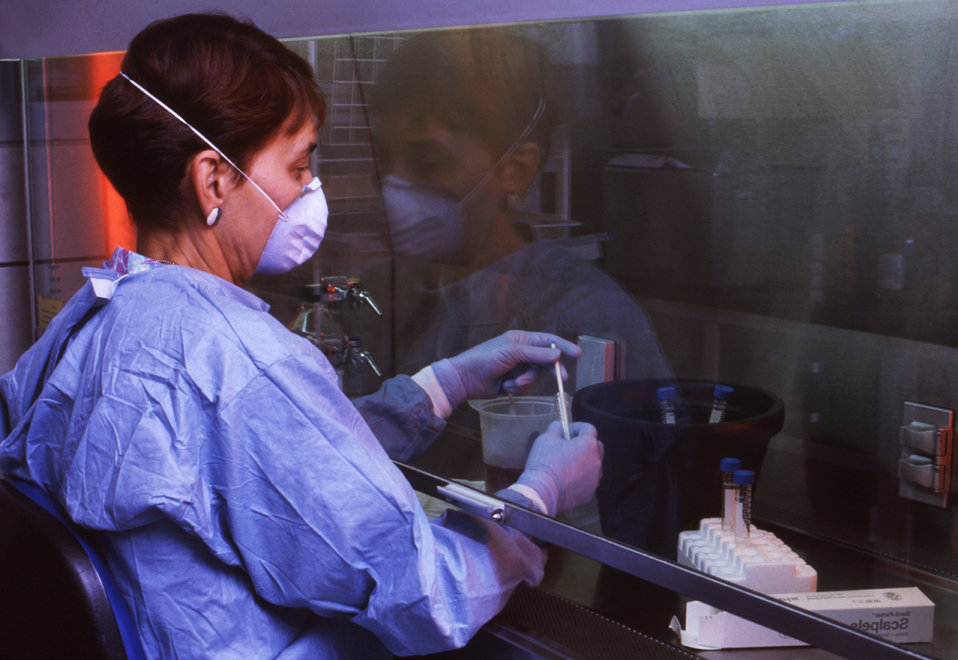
To protect technicians from biohazardous material contamination, work is carried out beneath a ventilated filtration hood.